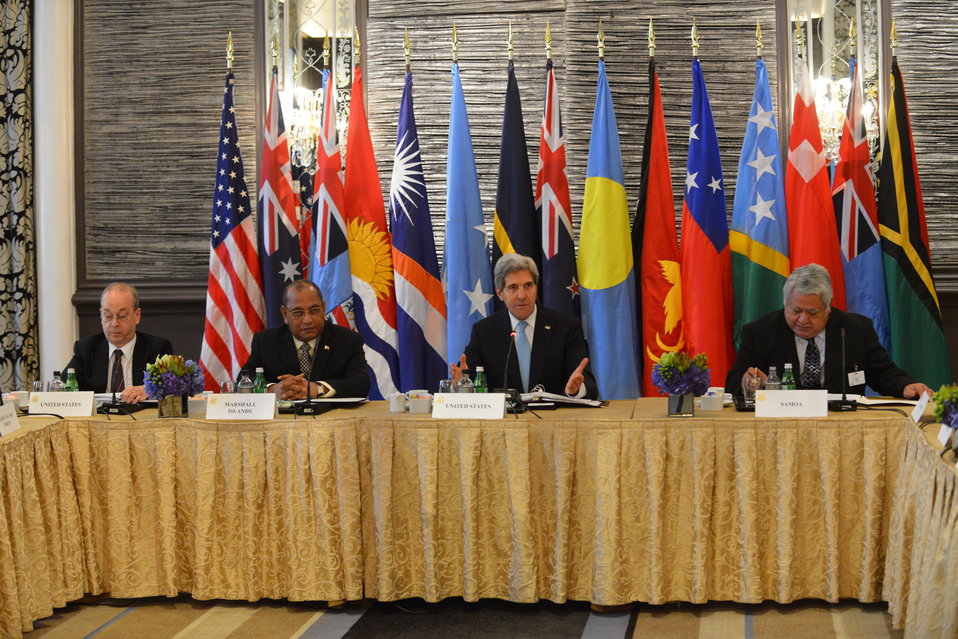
Secretary Kerry at the Pacific Islands Forum

U.S. Secretary of State John Kerry participates in a meeting of the Pacific Islands Forum in New York City on September 27, 2013.